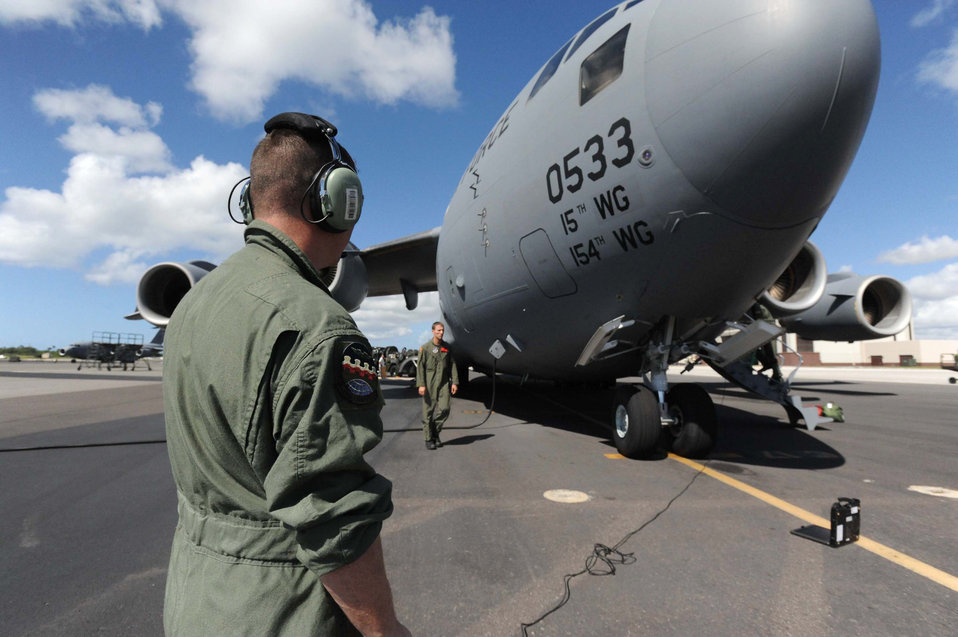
humanitarian mission to Japan

U.S. Air Force Tech. Sgt. Andrew Dunn, a 15th Aircraft Maintenance Squadron crew chief, conducts a pre-flight maintenance inspection on a U.S. Air Force C-17 Globemaster III cargo aircraft at Joint Base Pearl Harbor-Hickam, Hawaii, before departing on a humanitarian mission to Japan on March 12, 2011. The C-17 will be flown to various Air Force bases in Japan during its mission to provide support for Japan relief efforts in the wake of tsunami and earthquake damage there.